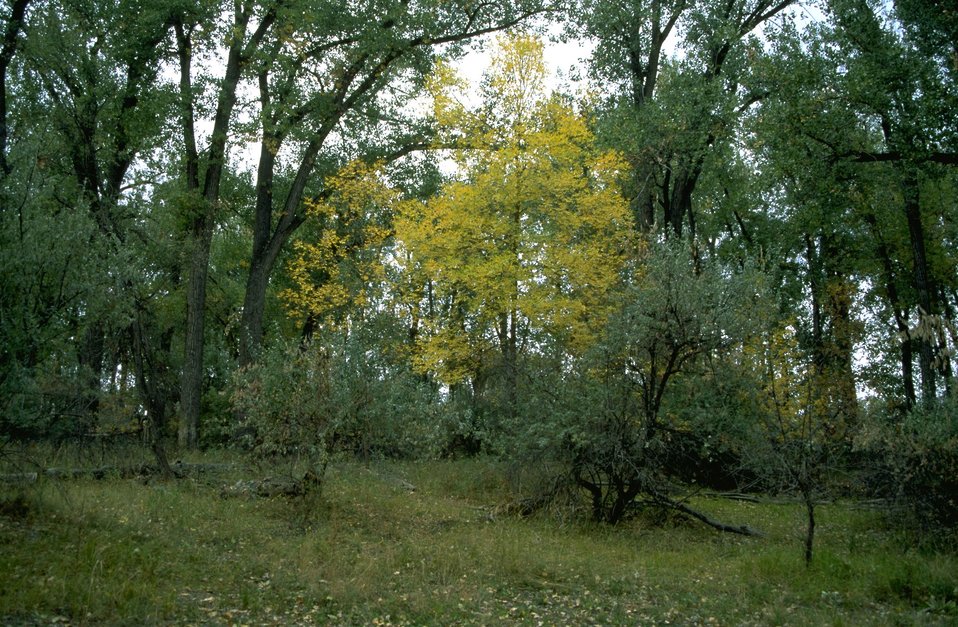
Yellowl-leafed tree amongst the green-leafed trees